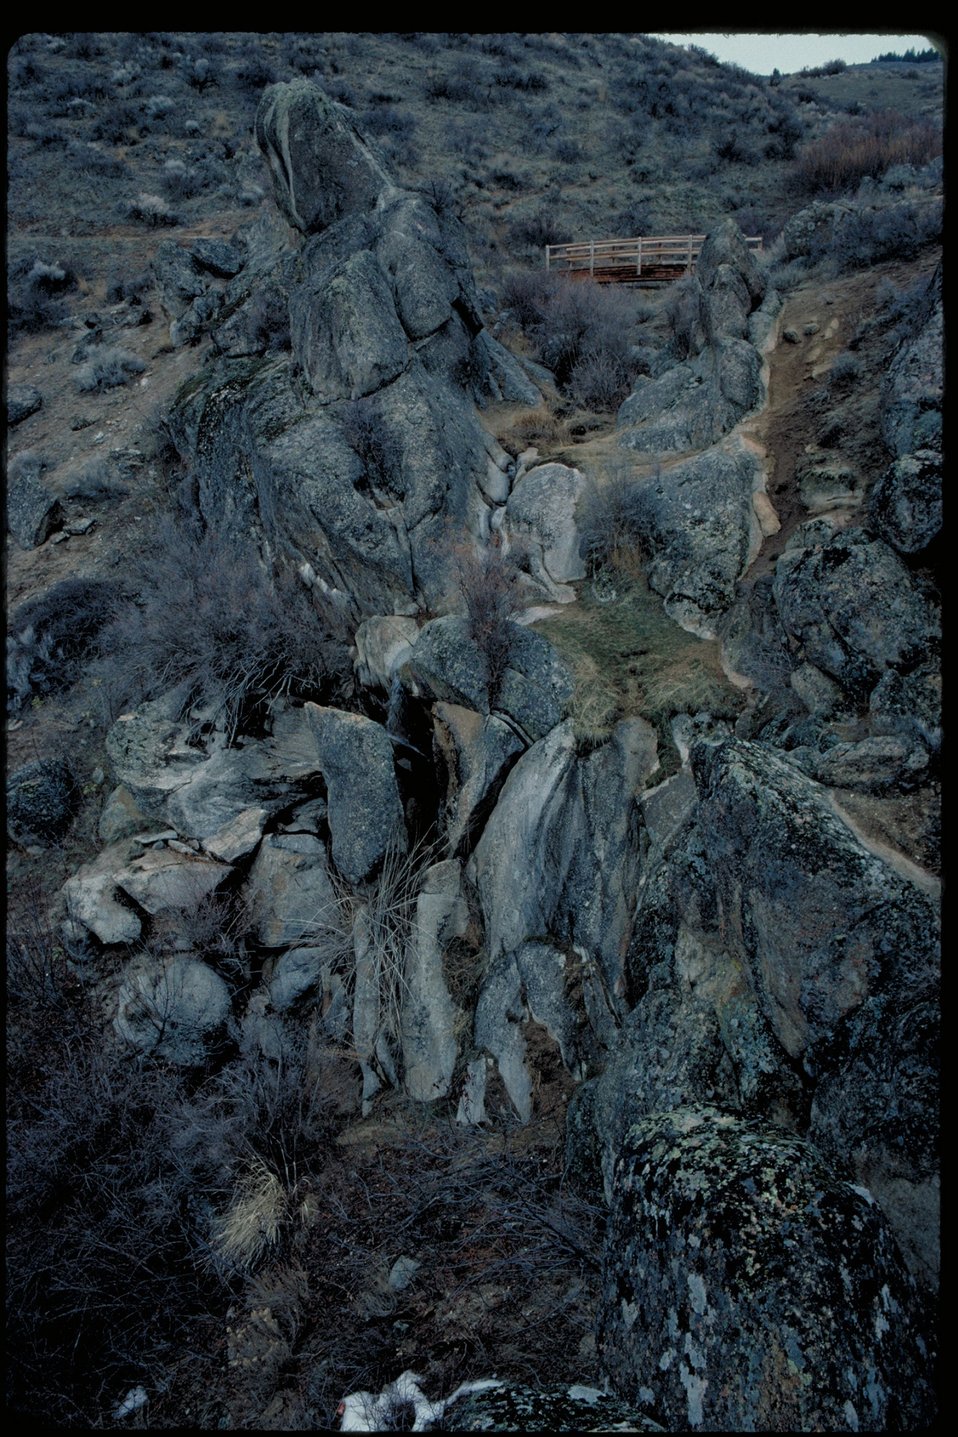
Hulls Gulch Bridge scenic Four Rivers Field Office LSRD Lower Snake River District